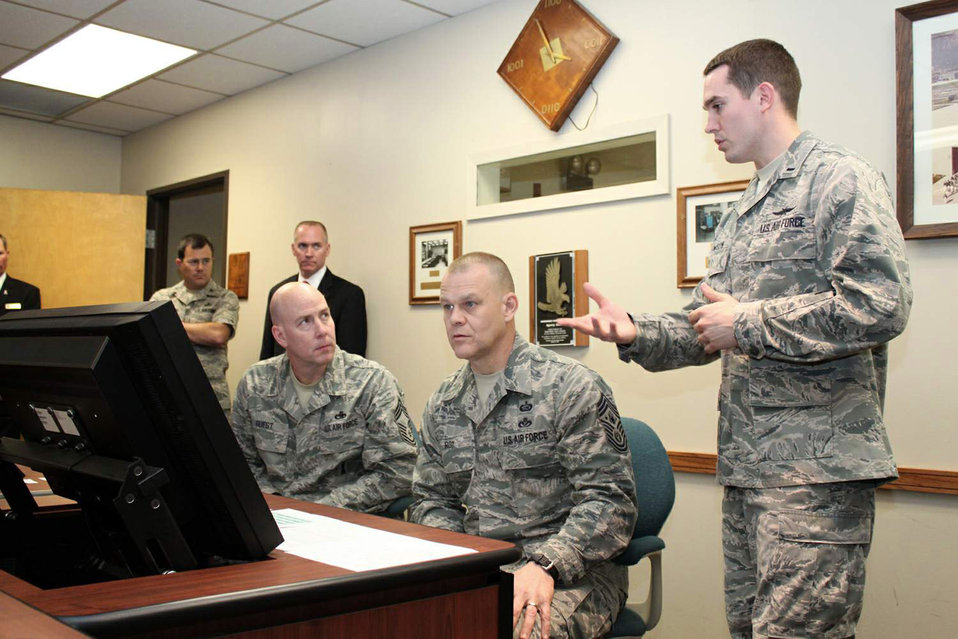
Enlisted development

1st Lt. Stephen Lawson explains the new enlisted development tool to Chief Master Sgt. of the Air Force James A. Roy and Chief Master Sgt. Ray Guest, the Air Force's nuclear weapons career field manager, March 31, 2011, at Randolph Air Force Base, Texas. Lawson is the Air Force Personnel Center's force development chief.